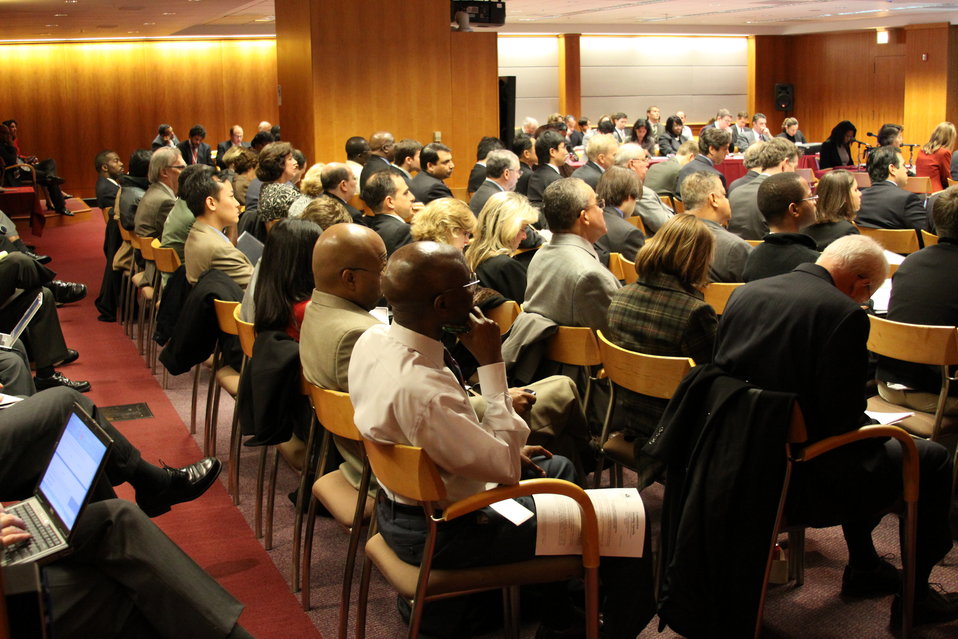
December Commission Meeting